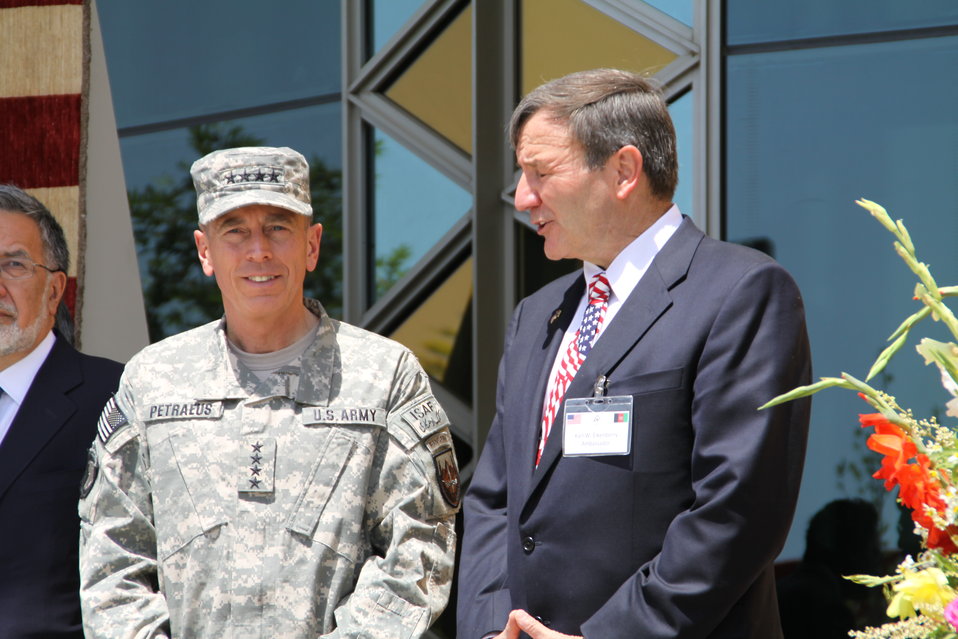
Kabul Official July 4th Celebration